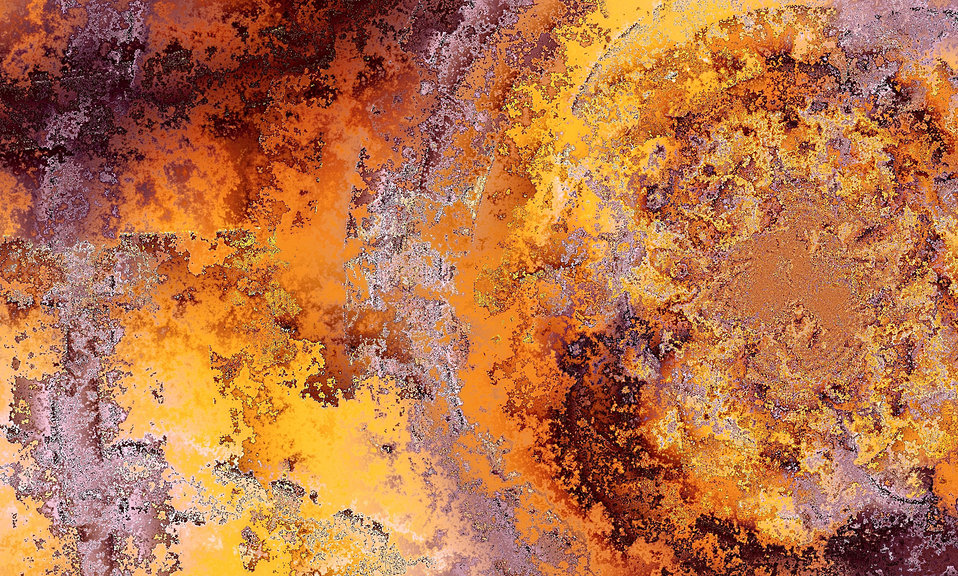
Orange purple background structure

Grunge orange purple background structure.